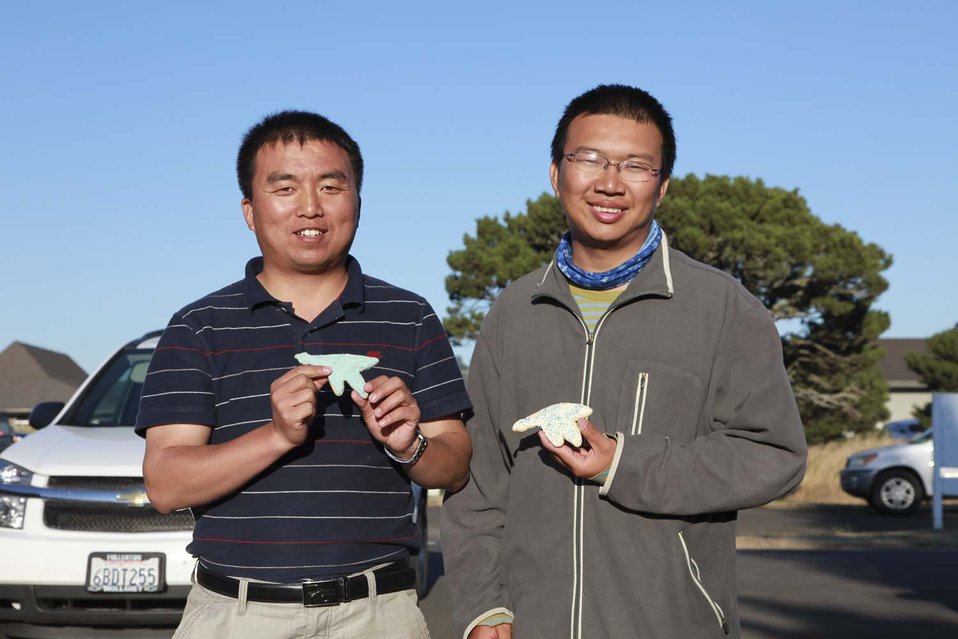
Enjoying Blue Goose cookies